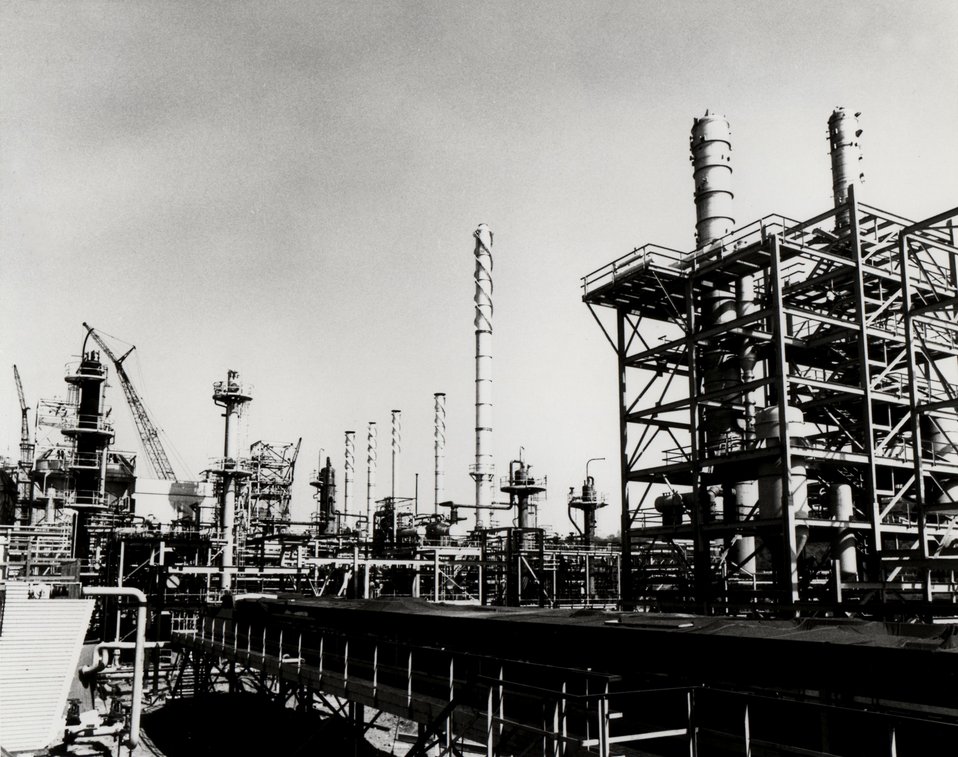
The background presents a general view of the Hydrogenation Aria. Circa 1979.